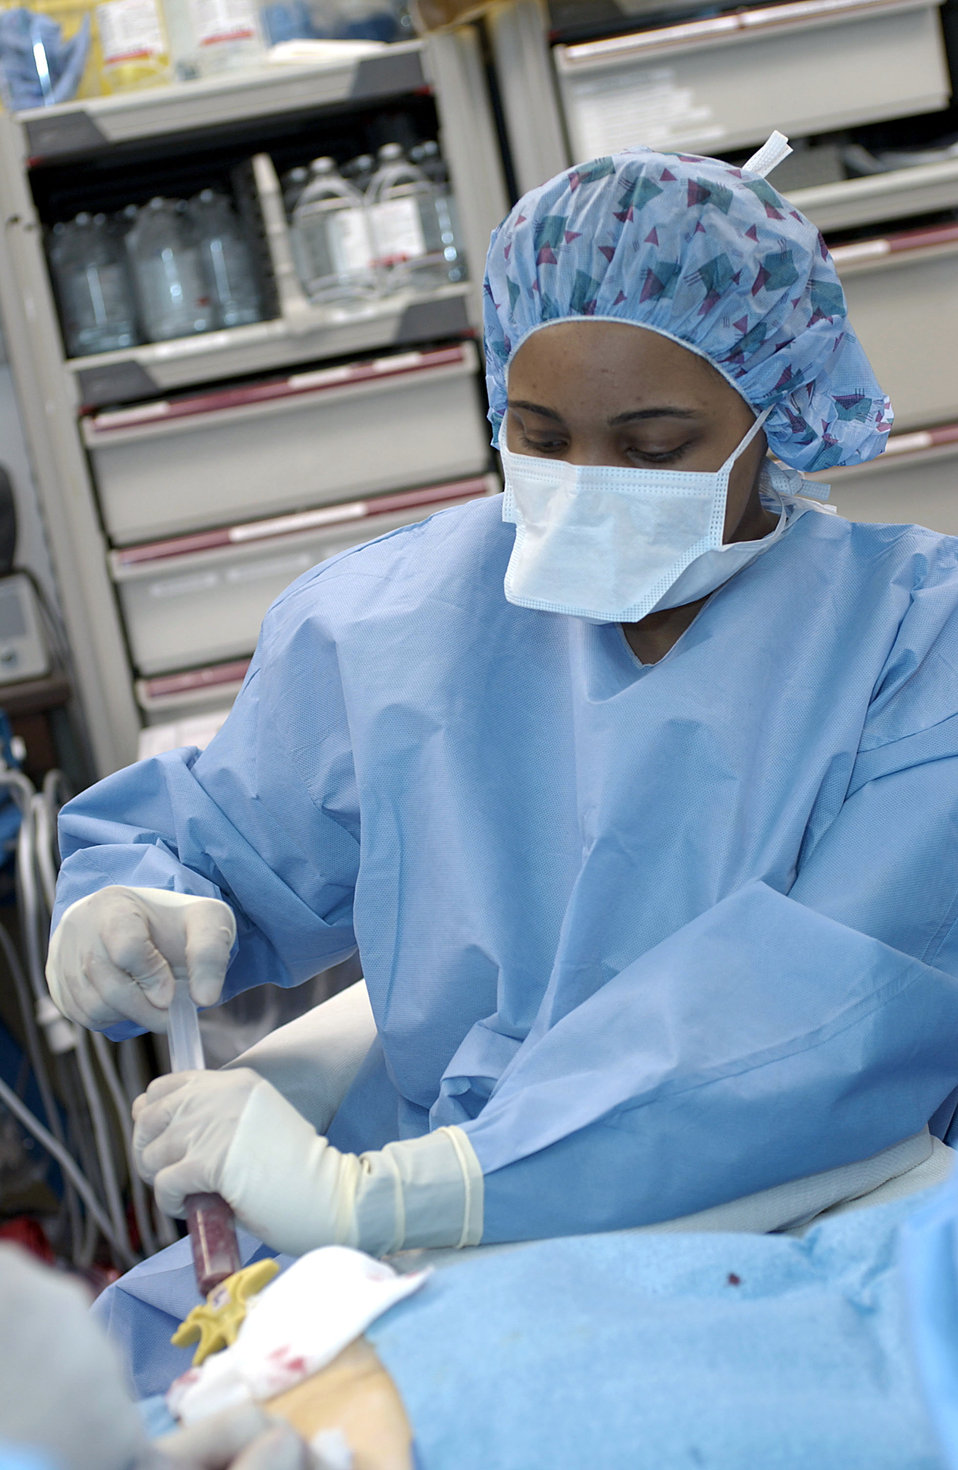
Captain's marrow saves life

WASHINGTON -- Dr. Tamarro Taylor performs the harvest procedure to extract marrow from Capt. Brent Davis' pelvic bone. The marrow Captain Davis donated will aid a 17-year-old boy in his recovery from non-Hodgkin's lymphoma, a type of cancer. Dr. Taylor is an assistant professor of medicine at Georgetown University. Captain Davis is the 910th Airlift Wing public affairs chief at Youngstown Air Reserve Station, Ohio.